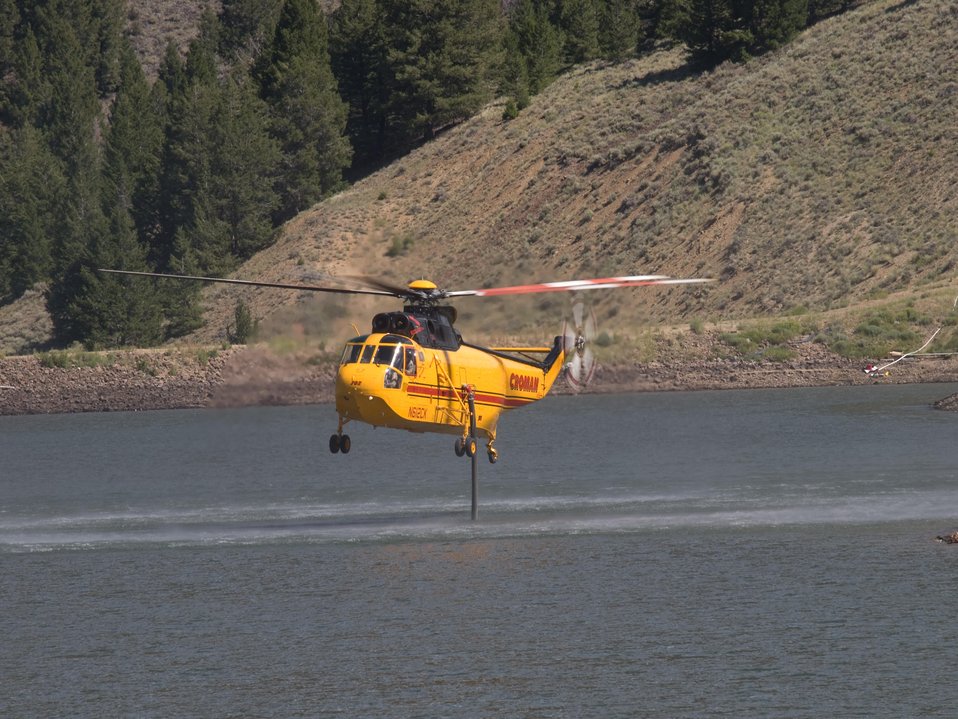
A helicopter refills its water tank at the Mosquito Flat Reservoir to fight the Lodgepole Fire on Jul. 28, 2013. The Lodgepole Fire in the Salmon-Challis National Forest near Challis, ID began on Jul. 20, 2013 by lightning has consumed approximately 20,080 acres and is approximately 15% contained.